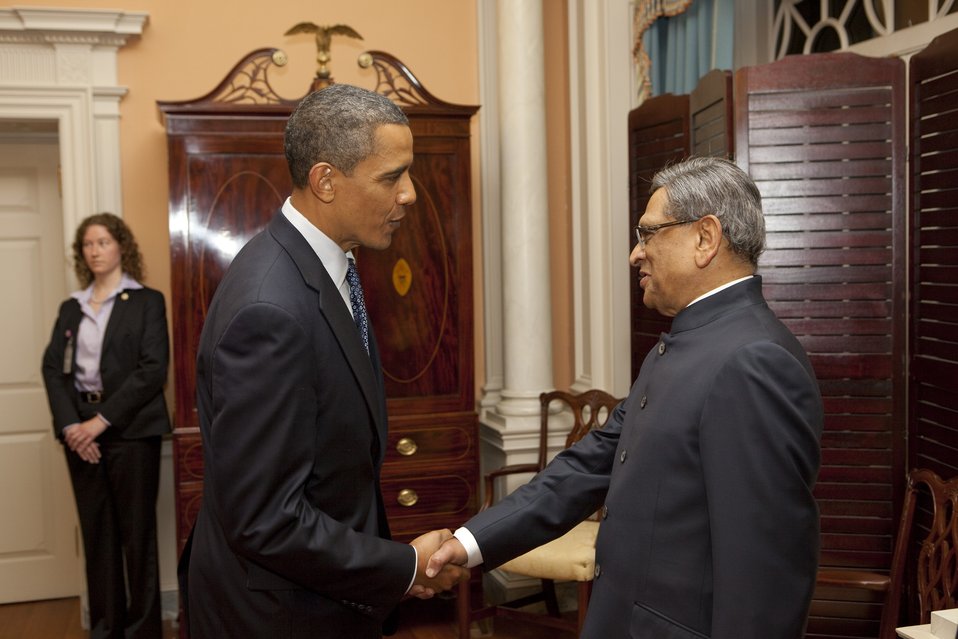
President Obama Shakes Hands With Indian Minister of External Affairs S.M. Krishna

U.S. President Barack Obama shakes hands with Indian Minister of External Affairs S.M. Krishna at the U.S.-India Strategic Dialogue reception at the the U.S. Department of State in Washington, D.C., on June 3, 2010.